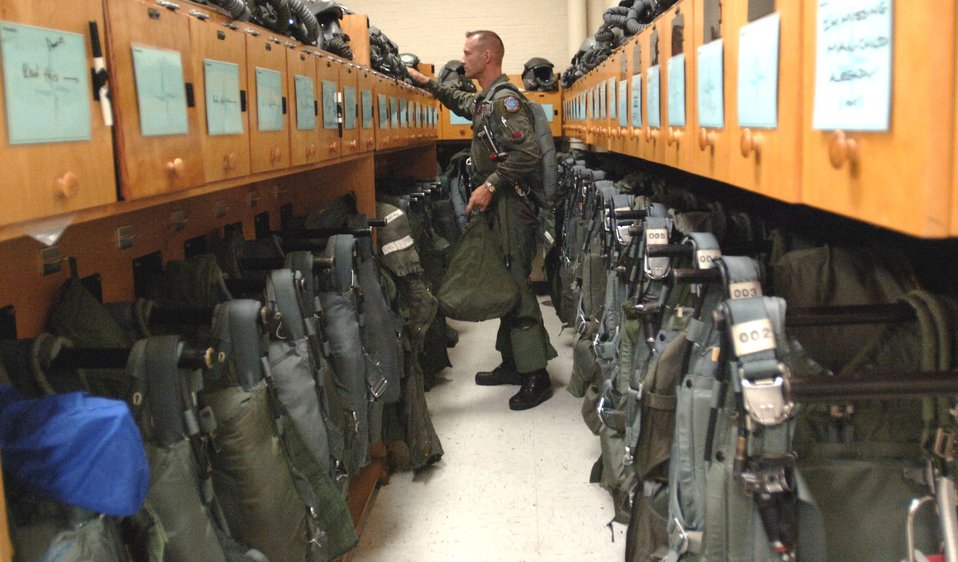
No matter the nationality, pilots speak same language

Capt. Lars Holten prepares for a routine aerial training flight on a T-38 Talon at Sheppard Air Force Base, Texas, on July 20. Captain Holten, from Norway, is an instructor pilot in the Euro-NATO Joint Jet Pilot Training program.